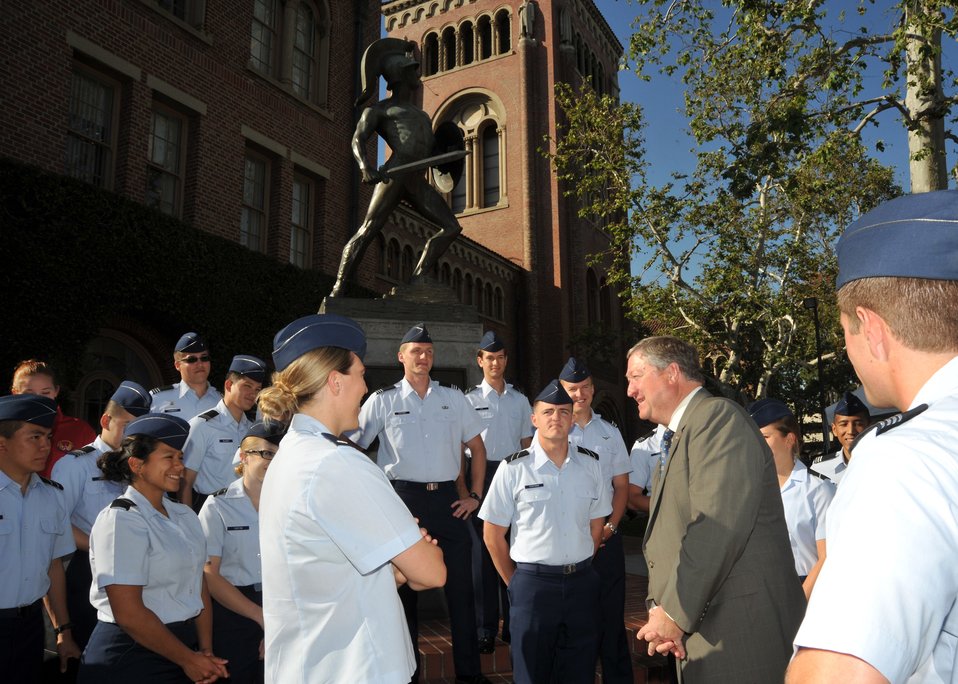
SECAF visits USC

Secretary of the Air Force Michael Donley speaks with cadets from the University of Southern California’s Air Force ROTC Det. 60 in front of the Tommy Trojan Statute April 25, 2011, during a visit to the USC campus.